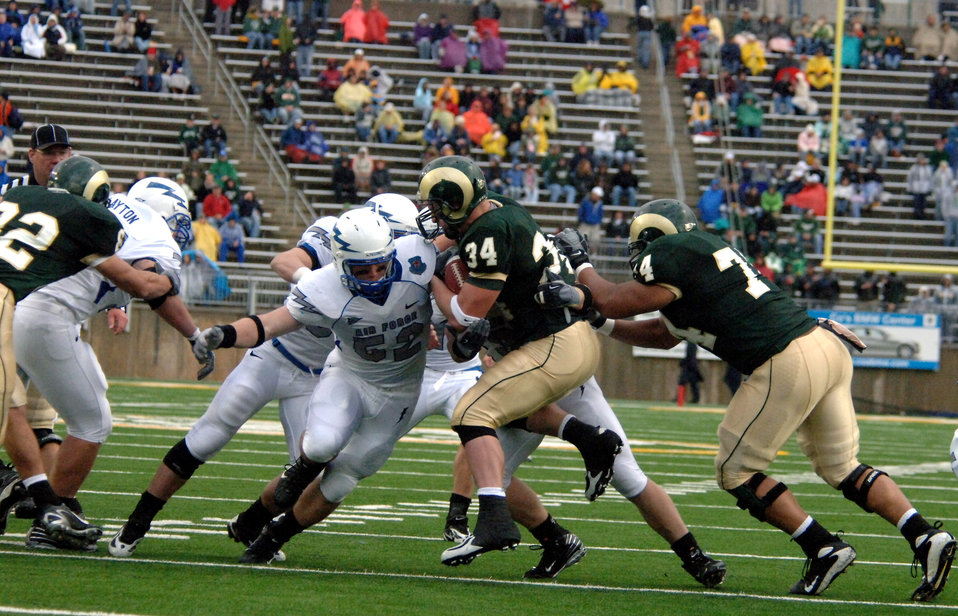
Football: Falcons, Hall run roughshod over CSU

Falcon linebacker Austin Randle and company swarm Colorado State running back Kyle Bell during Air Force's 45-21 win over the Rams Oct. 13 in Fort Collins, Colo. The Falcon defense held CSU's leading rusher from 2006 to just 30 yards on eight carries.